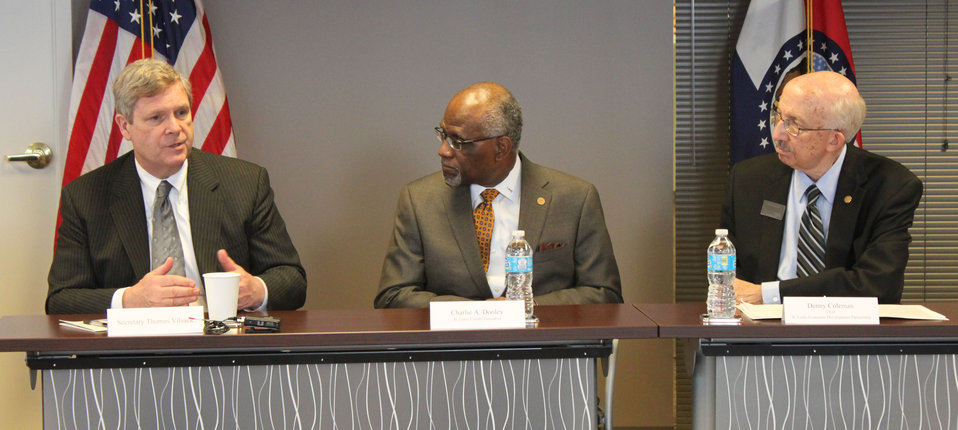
(L to R) Agriculture Secretary Tom Vilsack, St. Louis County Executive Charlie A. Dooley, and White House Business Council CEO St. Louis Economic Development Partnership Denny Coleman sit in on a roundtable discussion with business executives, local elected officials and community leaders in St. Louis, MO on Thursday, Jan. 30, 2014. The panel discussed how President Obama is moving the U.S. economy forward and Secretary Vilsack highlighted the role record agricultural exports continue to play in the nation’s economic recovery. The period 2009-2013 stands as the strongest five-year period for agricultural exports in America’s history.